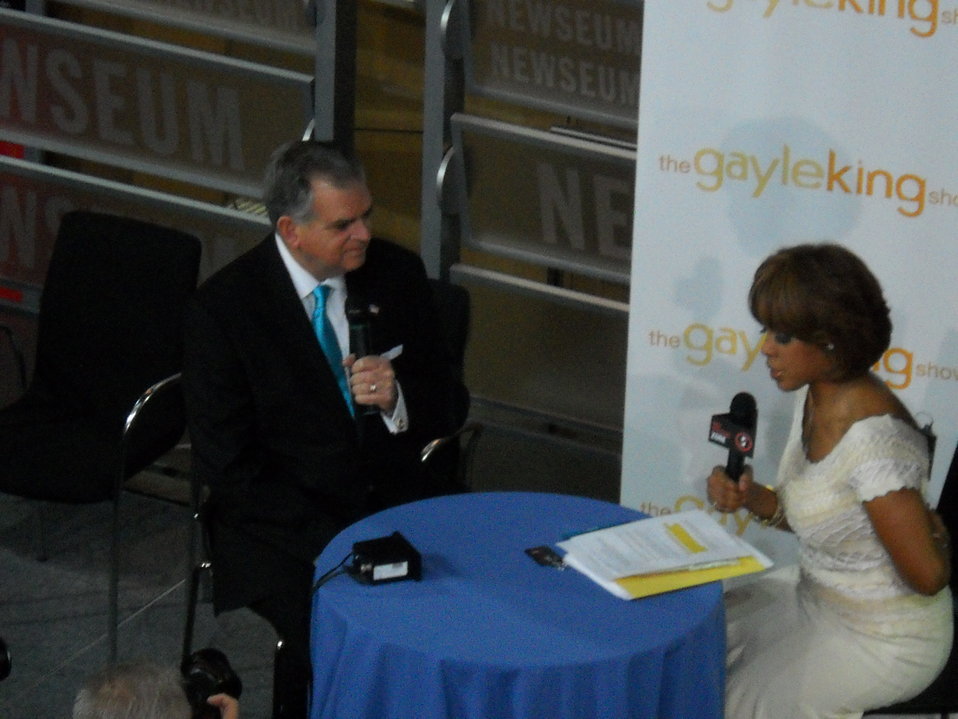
National No Phone Zone Day Newsum Washington, DC April 30, 2010 022